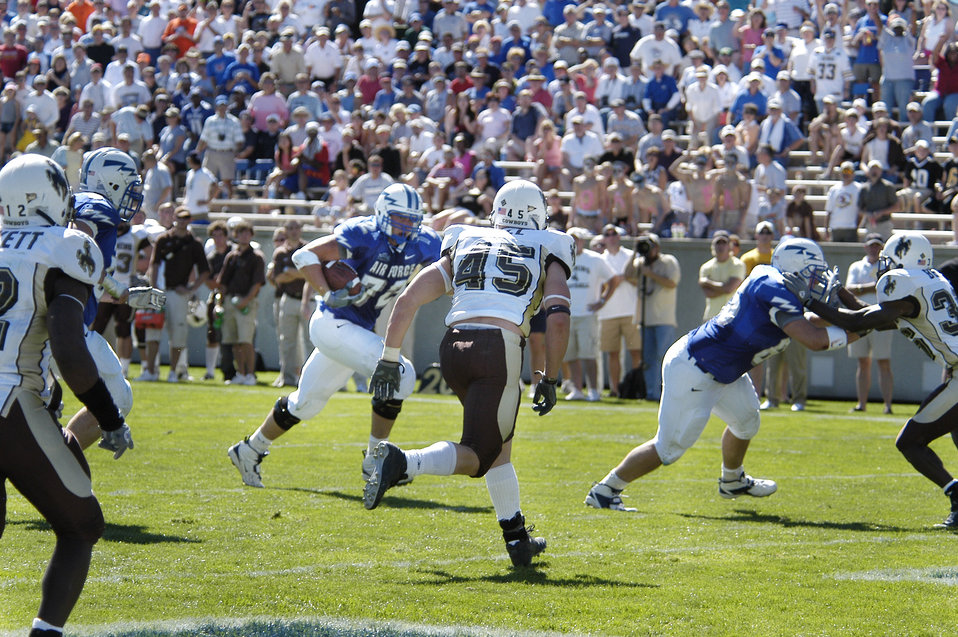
U.S. AIR FORCE ACADEMY, Colo. -- Falcon offensive tackle Robert Kraay, 72, eyes University of Wyoming linebacker Austin Hall, 45, on his way to scoring on a two-point conversion following an Air Force touchdown here Sept. 17. The Cowboys went on to edge the Falcons 29-28.